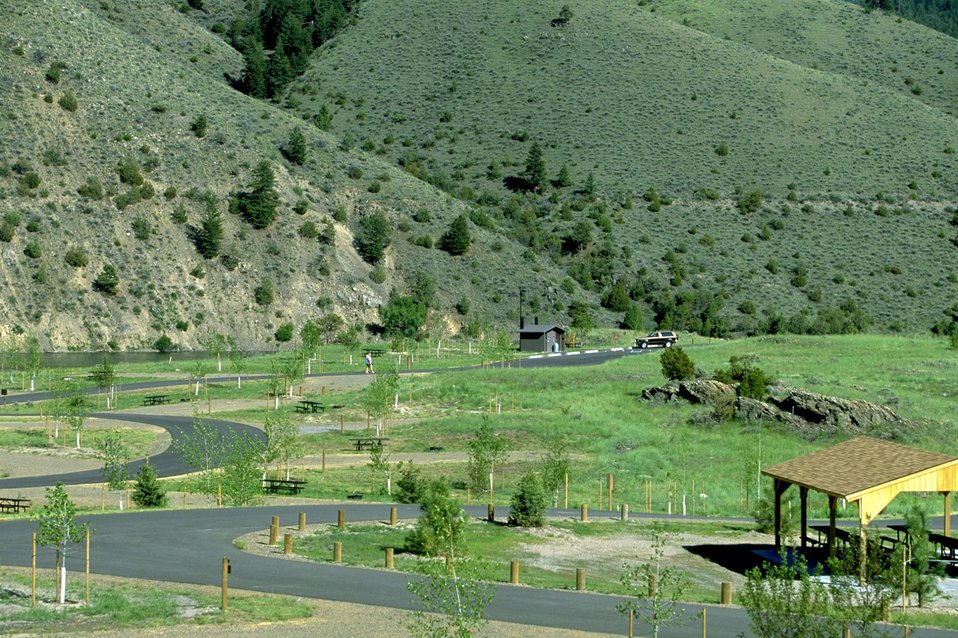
Devils Elbow Campground, nestled below the mountains by Hauser Lake